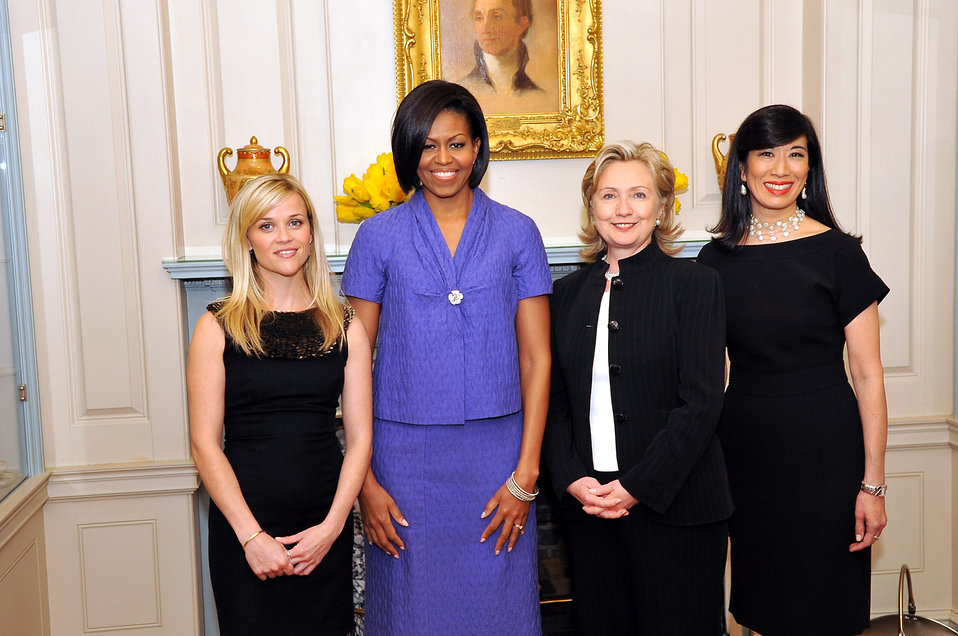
Secretary Clinton With First Lady Michelle Obama, Reese Witherspoon and Andrea Jung

U.S. Secretary of State Hillary Clinton and First Lady Michelle Obama stand with Chairwoman and CEO of Avon Andrea Jung, and Avon's Global Ambassador Reese Witherspoon, at the 2010 International Women of Courage Awards at the U.S. Department of State, Washington, D.C. March 10, 2010.